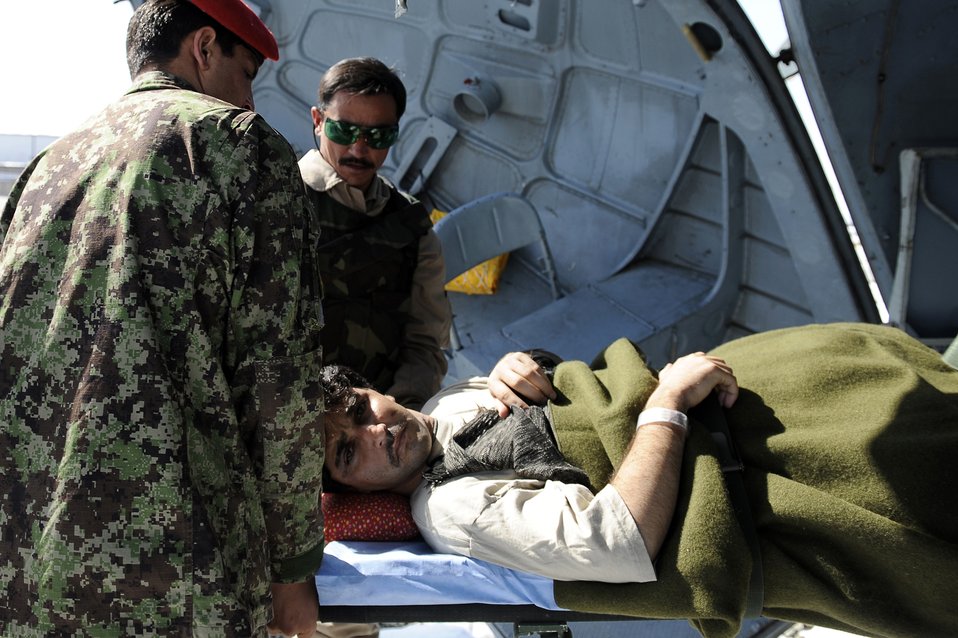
An Afghan airman and soldier unload an injured Afghan soldier from a Mi-17 helicopter

Afghanistan National Army Air Corp Sgt. 1st Class Ghulam Sakhi and a soldier from the Afghan National Army unload an injured soldier from a Mi-17 helicopter Feb. 3, 2010, at Bagram Airfield, Afghanistan. Sergeant Sakhi is a flight medic with the 438th Air Expeditionary Advisory Group/Combined Air Power Transition Force.